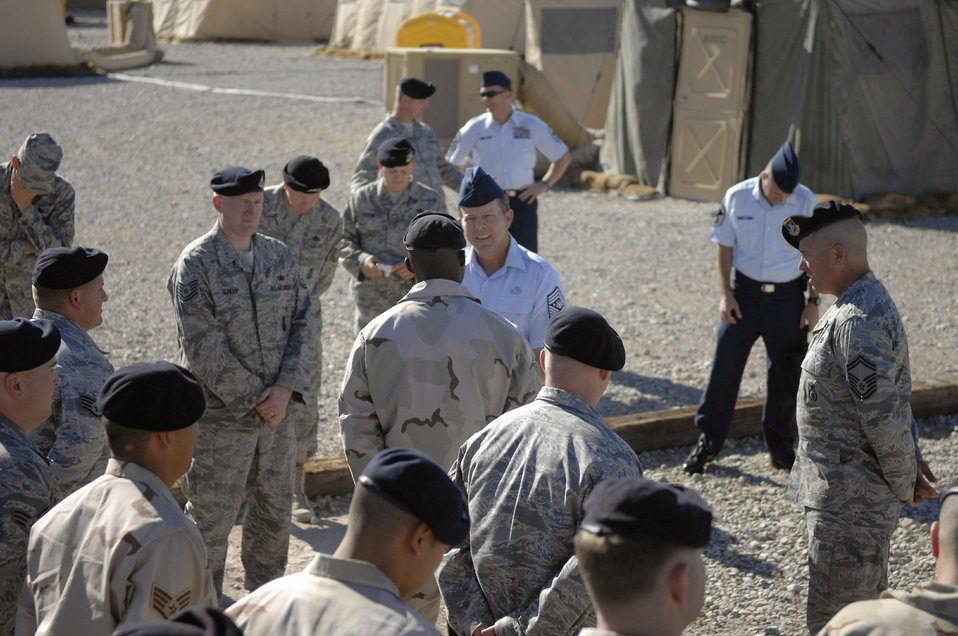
Top enlisted Airman visits Creech Airmen

Chief Master Sgt. of the Air Force Rodney J. McKinley visits with Airmen assigned to the 99th Ground Combat Training Squadron Oct. 6 at Creech Air Force Base, Nev. Squadron Airmen provide advanced ground combat weapons and tactics instruction that enhance the combat capabilities of Air Force ground forces.